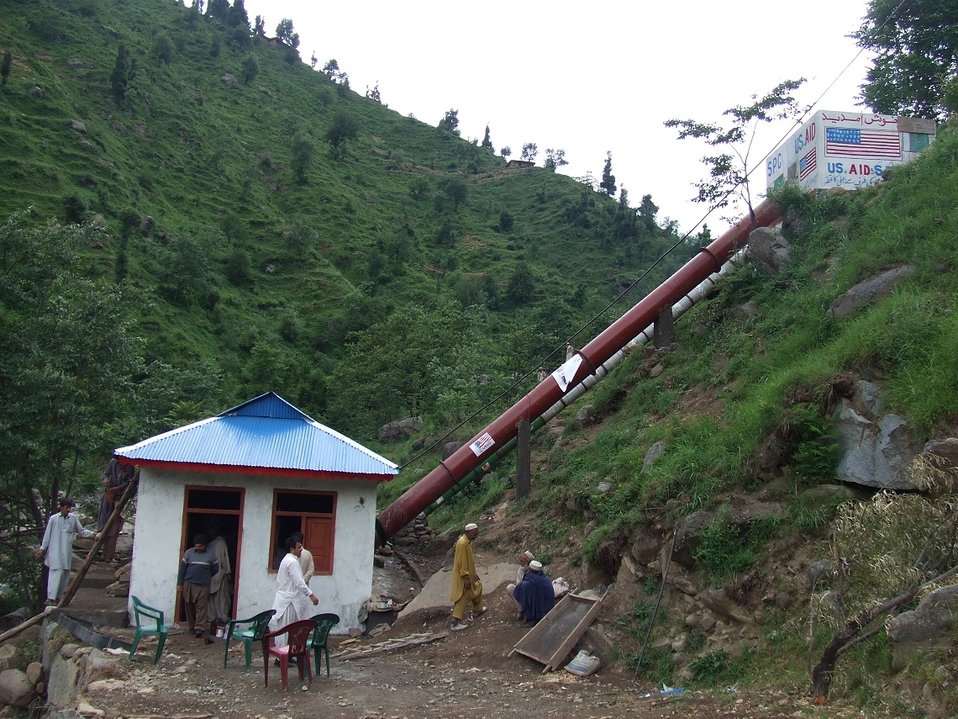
During Launch of Power Project

A new wave of energy has swept a remote village of Matta Tehsil. Children are excited, elders relieved. Electricity had lit their dark houses after over six decades of independence and connected them to the modern world.
“We can now watch cartoons on the TV just like all the other children,” said an excited child during the inauguration of a micro-hydropower station on Saturday.
The community-based power station, which will supply electricity to about 110 households in Swatai village, has been installed with the assistance of Small Grants Ambassador Fund Program of the USAID in collaboration with the Swat Participatory Council (SPC).